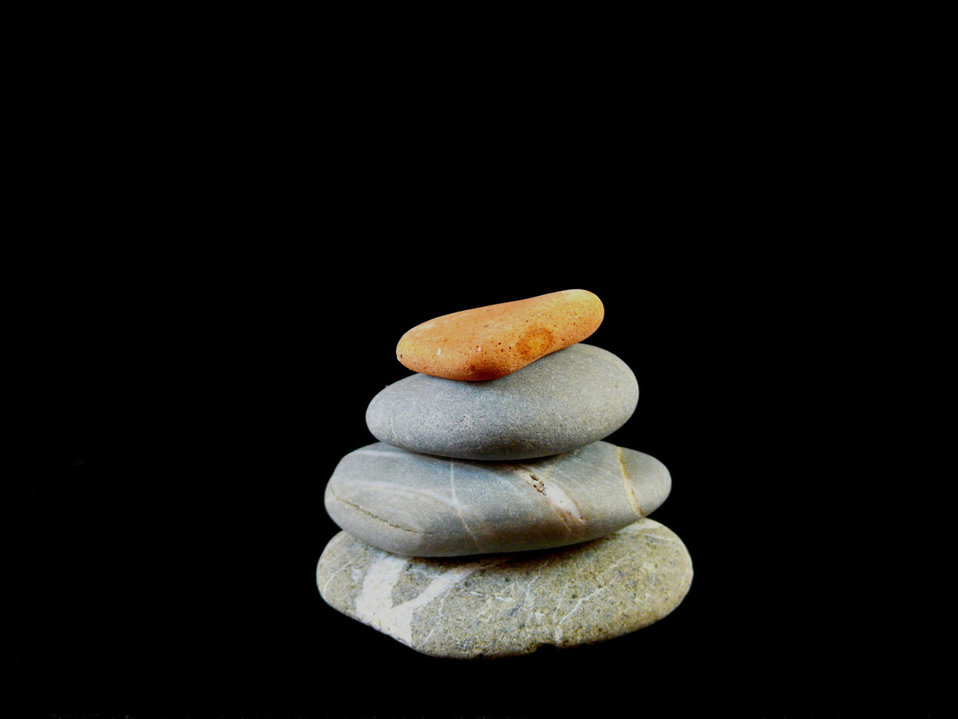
Stones on black backround.